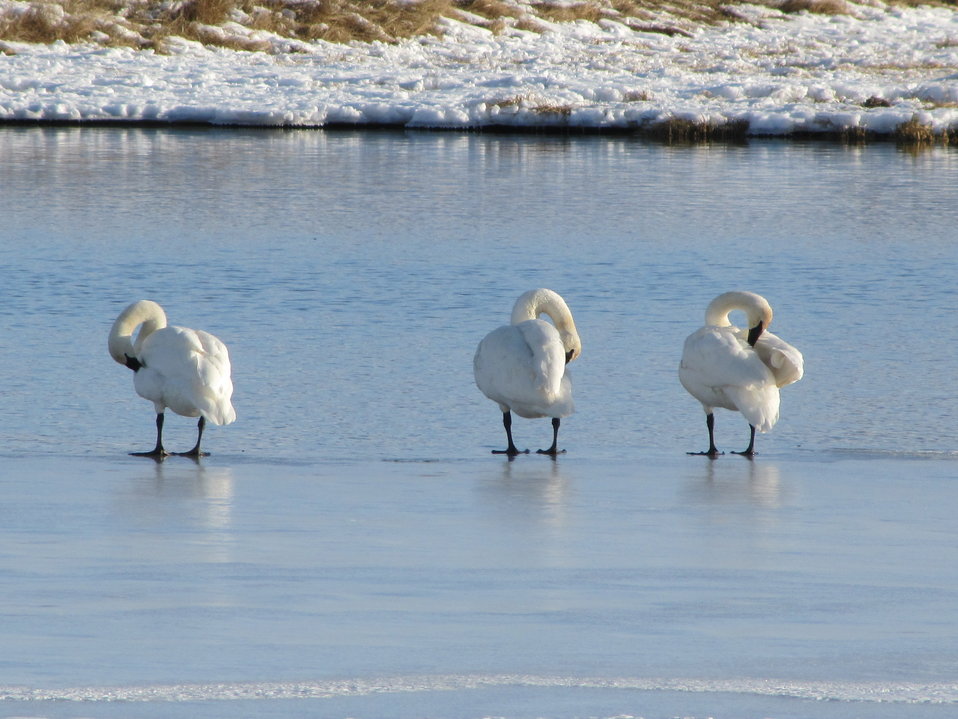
Getting Ready for the Day

A group of swans preen themselves in the early morning light on a crisp winter day.